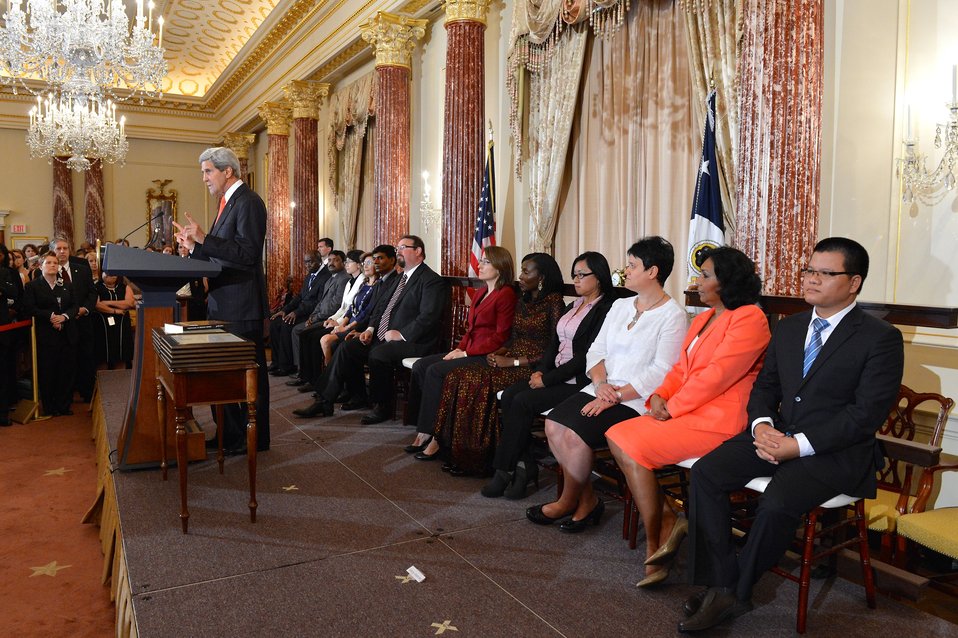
Secretary Kerry Releases the 2014 Trafficking in Persons Report and Honors the 2014 TIP Report Heroes

U.S. Secretary of State John Kerry unveil the 2014 Trafficking in Persons Report, which assesses government efforts around the world to combat modern slavery, at the U.S. Department of State in Washington, D.C., on June 20, 2014. Secretary Kerry also honors the 2014 TIP Report Heroes, 10 men and women whose tireless efforts have made a lasting impact on the global fight against modern slavery. The 2014 TIP Heroes are Gilbert Munda of the Democratic Republic of Congo, Elisabeth Sioufi of Lebanon, Beatrice Jedy-Agba of Nigeria, Monica Boseff of Romania, Ta Ngoc Van of Vietnam, Bhanuja Sharan Lal of India, Tek Narayan Kunwar of Nepal, Jhinna Pinchi of Peru, Charmaine Gandhi-Andrews of Trinidad and Tobago, and Myeong-jin Ko of South Korea.